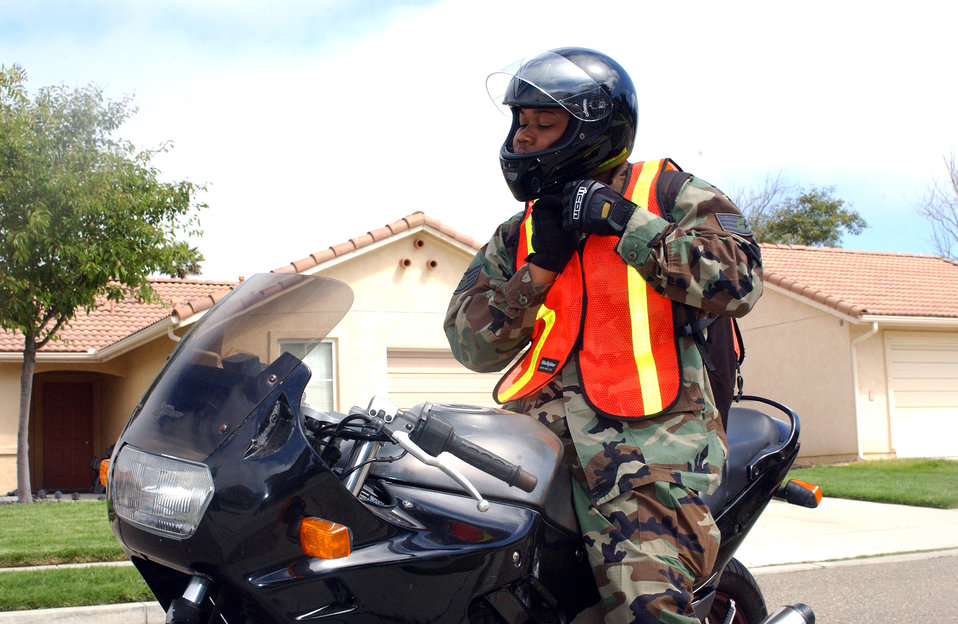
Safety course teaches risk management for two-wheelers

VANDENBERG AIR FORCE BASE, Calif. -- Staff Sgt. Allen Puckett fastens the chin strap of his helmet. Proper wear of safety equipment is an essential element of reducing risk while riding motorcycles.